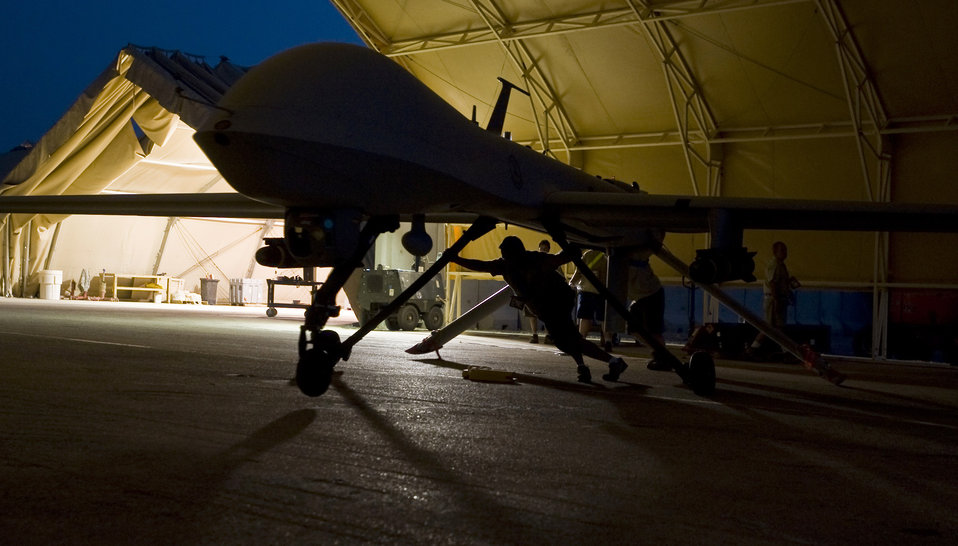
Night watch

An MQ-1 Predator goes through post-flight maintenance Aug. 11 at Ali Base, Iraq. The Predator provides integrated and synchronized close-air combat operations, including intelligence, surveillance and reconnaissance, to ground commanders. The Predator is assigned to the 46th Expeditionary Reconnaissance and Attack Squadron Det. 1 here.